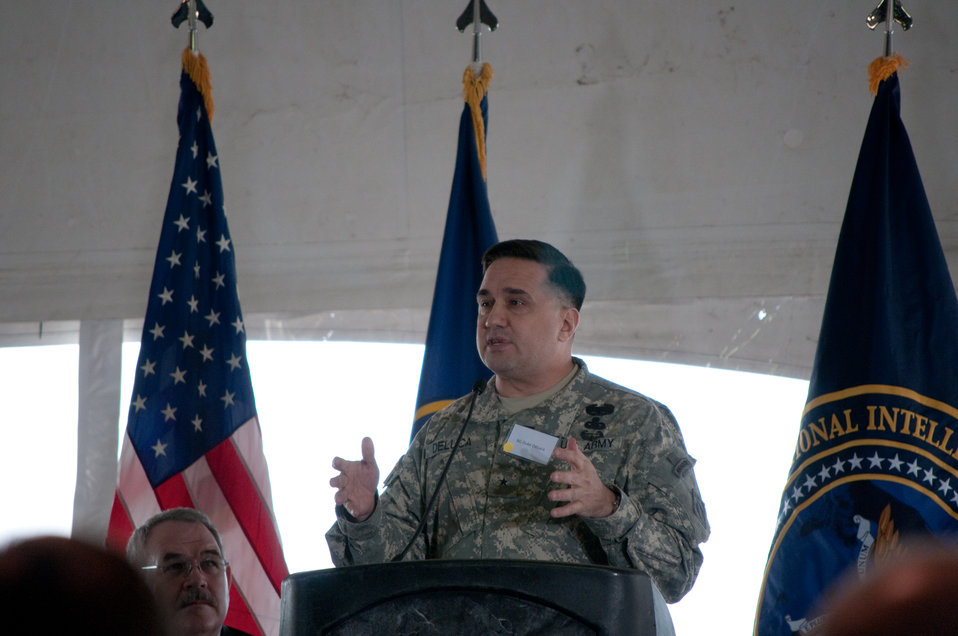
SALT LAKE CITY (Jan. 7, 2011) – Brig. Gen. Peter A. DeLuca, commander of the North Atlantic Division of the U.S. Army Corps of Engineers, speaks during a ground breaking ceremony for a new $1.2 billion data center at Camp W.G. Williams here Jan. 6. Two Corps of Engineers districts serve on the Utah Data Center project, Baltimore and Sacramento districts, which are responsible for handling the acquisition and contracting process, design management and review, and project management of the project. The facility will assist various agencies, including the Department of Homeland Security, in protecting national security networks. The National Security Agency is the executive agent for the Office of the Director of National Intelligence and will be the lead agency at the data center.